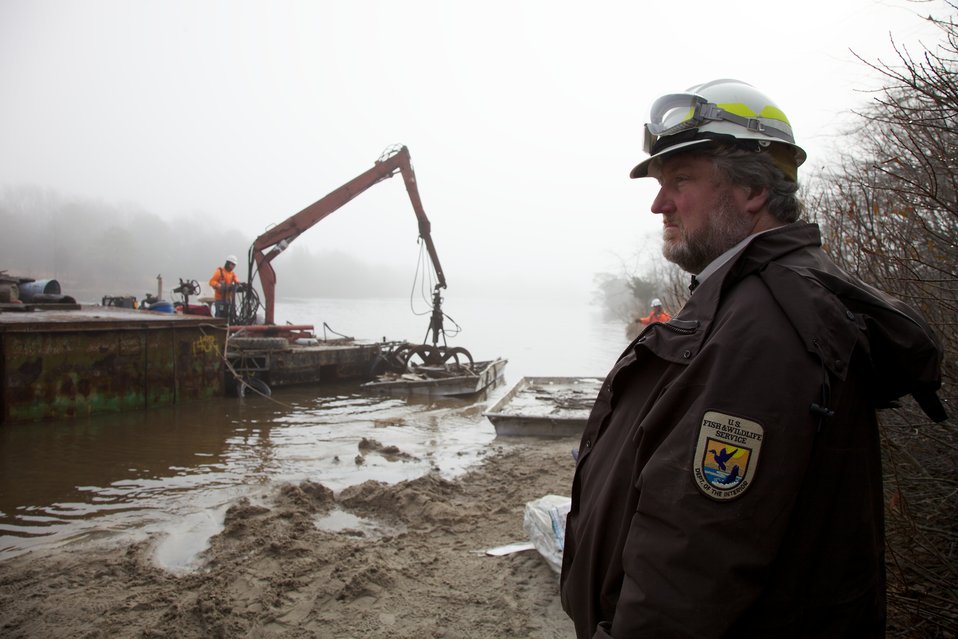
Forsythe NWR debris cleanup

FWS contract administrator Mike Durfee observes water-based debris removal at E.B. Forsythe National Wildlife Refuge.